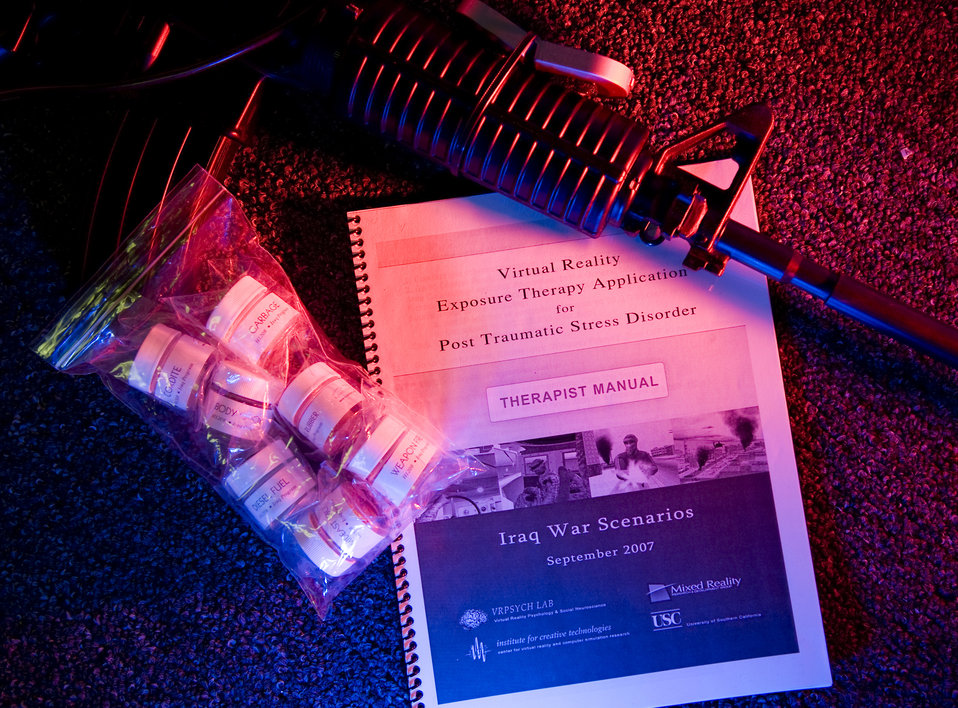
Virtual Reality

Mock M-16, therapist manual and a package of various odor concentrations used with virtual reality simulation software at David Grant Medical Center's Mental Health Clinic uses integrated motion inducing platform, headphones, cued smells generator, mock M-16 with directional controls / game controller and virtual reality visor work together to help Operation Iraqi Freedom and Operation Enduring Freedom veterans with combat post traumatic stress disorder (PTSD). The software, introduced to eight bases in the Air Force, is designed to create a safe environment for redeployers with PTSD to recreate a traumatic situation they have experienced. By talking about the their experience people build details to the simulation. Little by little, they gain a better understanding of the traumatic experience. The VR technology compliments the evidence-based treatment known as 'Prolonged Exposure Therapy' and other research proven approaches are used here to help deployers live a normal life. David Grant USAF Medical Center at Travis AFB, California is the Air Force's largest medical facility on the West coast. Serving military beneficiaries throughout eight western states. DGMC is the second largest inpatient Military Treatment Facility in the United States Air Force, providing a full spectrum of care to 81,991 eligible beneficiaries, and 400,000 Veterans Administration's Northern California Health Care System eligible population.